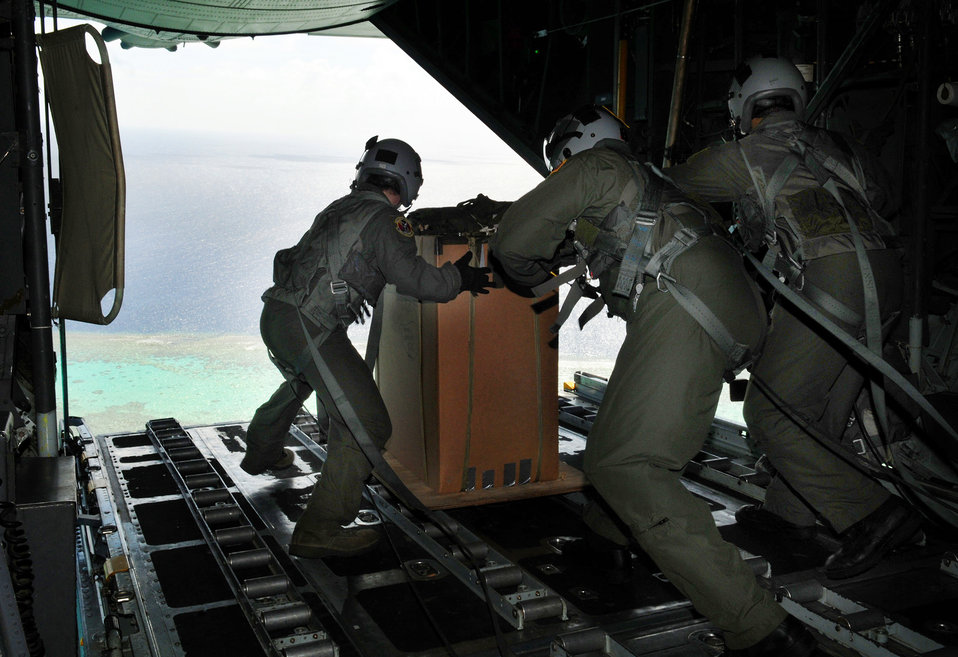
Airmen drop donated goods to islanders

Airman from the 36th Airlift Squadron at Yokota Air Base, Japan, prepare to drop a package over a remote island near Chuuk Dec. 17, 2009. Operation Christmas Drop is a non-profit organization sponsored by volunteers from Andersen Air Force Base and the local Guam community.